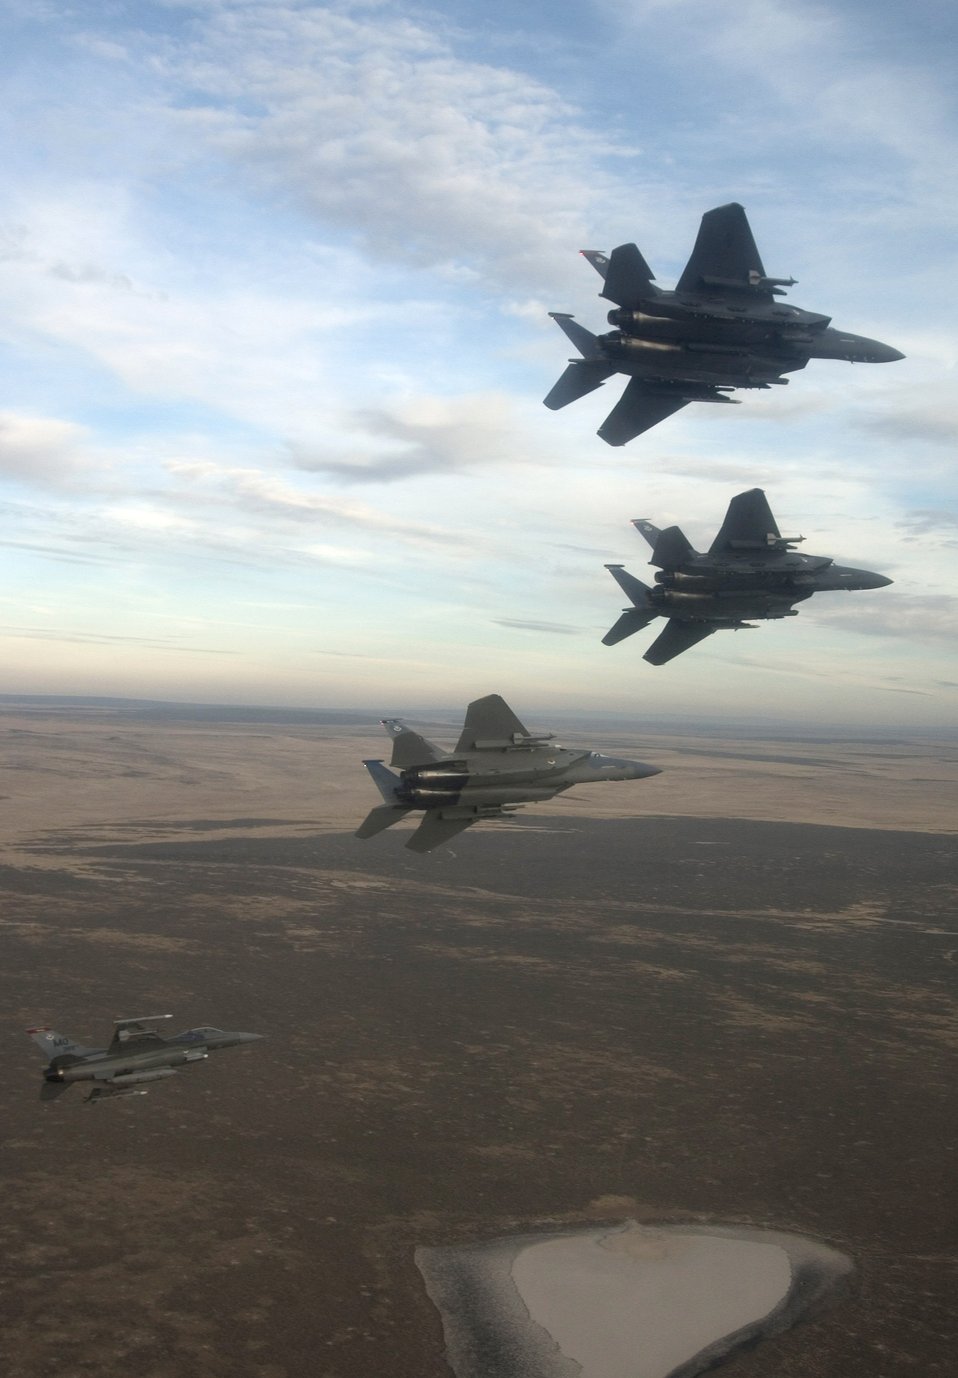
Flying over Idaho

A four-ship formation flies out to the Idaho training ranges Nov. 1. Col. Anthony Rock, 366th Fighter Wing commander, led the formation of two F-15 Strike Eagles, an F-15 Eagle and an F-16 Fighting Falcon from the 366th FW at Mountain Home Air Force Base, Idaho. The 366th FW began the first phase of its F-16 Fighting Falcon drawdown when five jets departed the base Nov. 2. The departure is part of the wing's realignment.